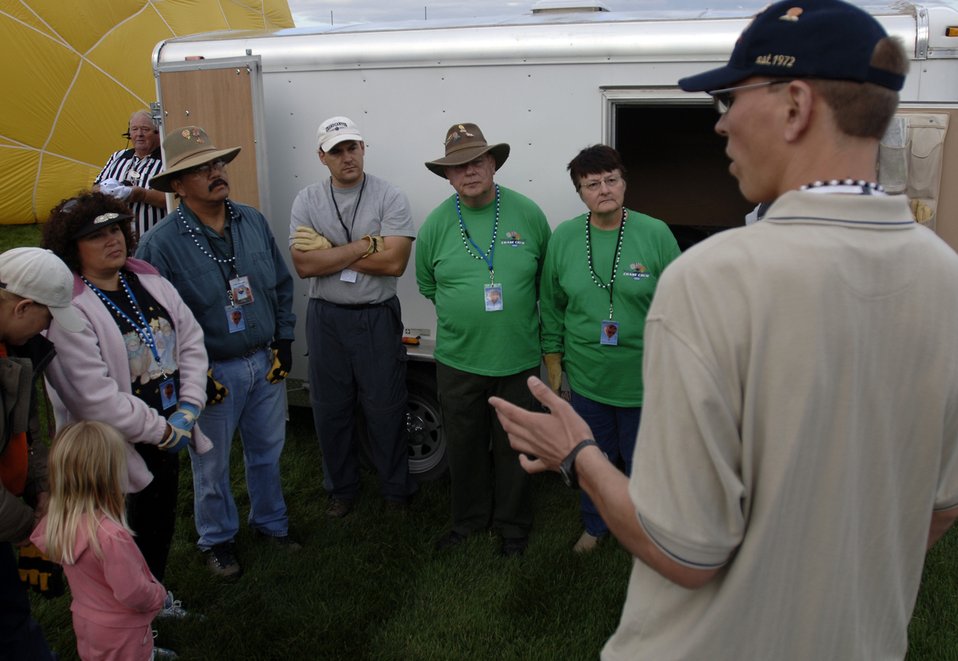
Prepare for take off

Bill Manus, balloon pilot, briefs his team on safety measure before mobilizing them to launch his balloon called the Shadow Dancer. His balloon along with around 700 other hot air balloons prepared to take off for the first mass ascension over Fiesta Park during the Balloon Fiesta at Albuqerque, New Mexico, Oct. 7, 2006. Balloon Fiesta is a world-renowned New Mexico attraction where several hot air balloons have been flying for thirty five years. Staff Sgt. Bill Manus is an electronics warfare journeyman with the 150 Fighter Wing New Mexico Air National Guard.